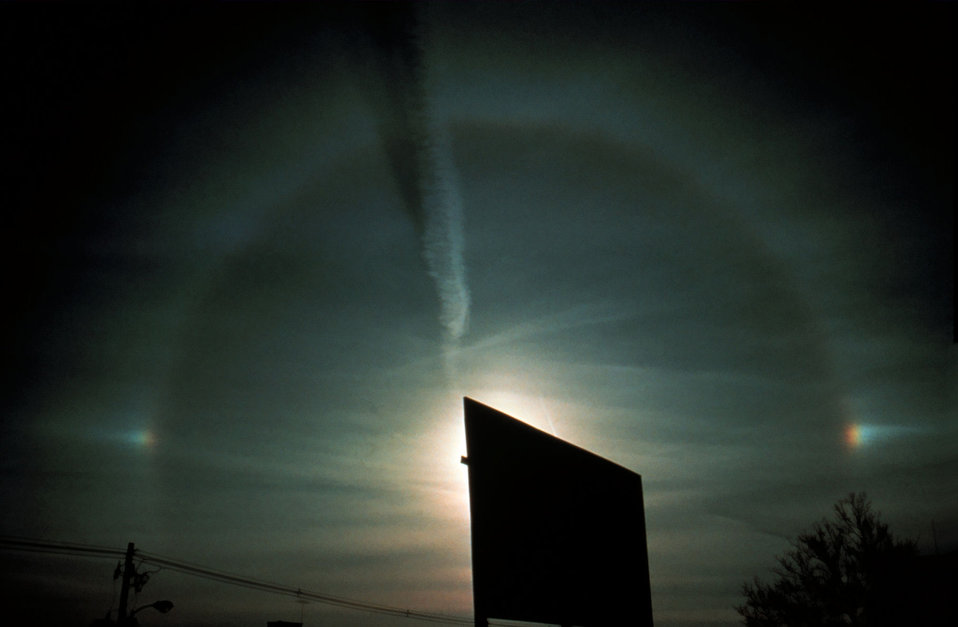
Partial halo with parhelia (sun dogs) on both sides of halo